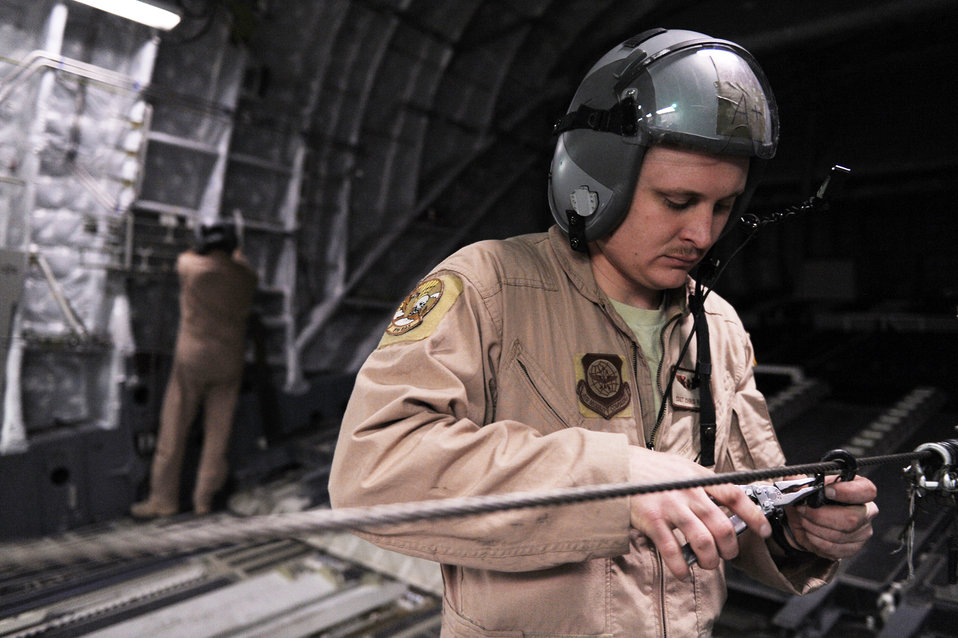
Combat air delivery over Afghanistan

Staff Sgt. Chris Rapp removes hooks attached to supplies delivered Feb. 1, 2010, over Afghanistan. Sergeant Rapp is a C-17 Globemaster III loadmaster assigned to the 816th Expeditionary Airlift Squadron.